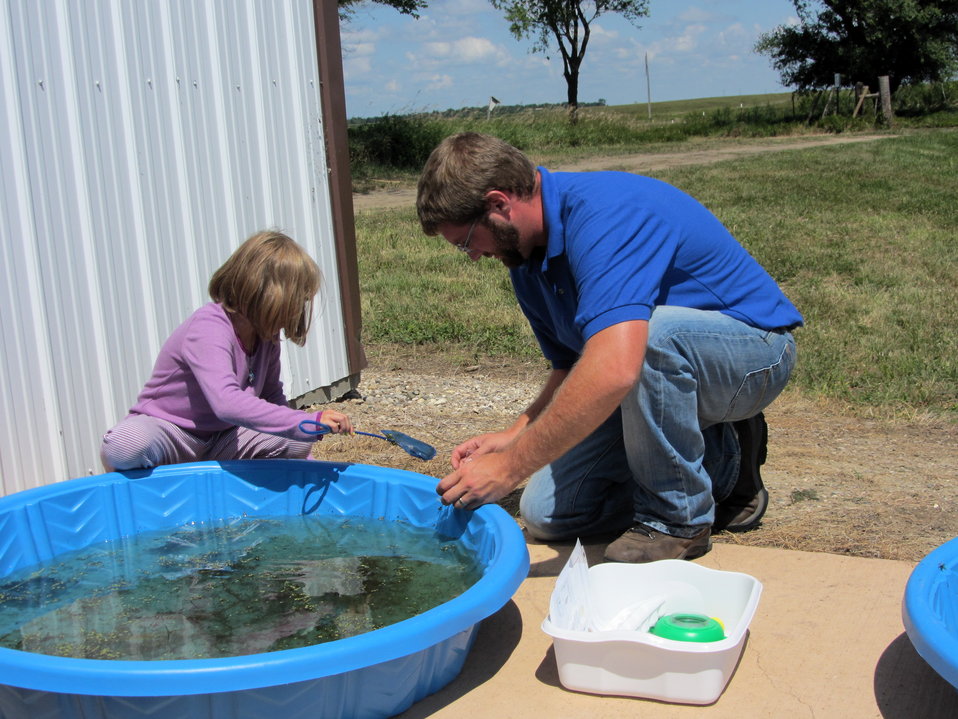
2011 Huron Prairie Fest

During the 'explore a wetland' activity, kids found all sorts of invertebrates and looked at them under microscopes.